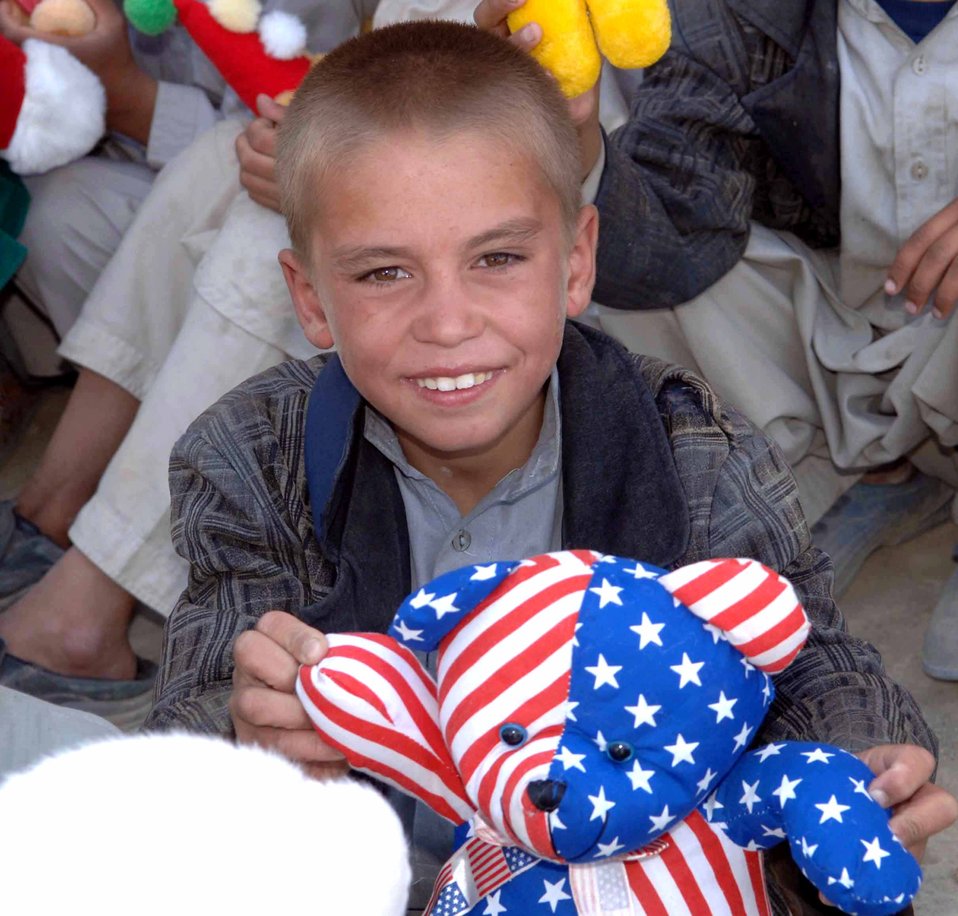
Airmen donate time, supplies to Afghans

PARWAN PROVINCE, Afghanistan -- An Afghan boy holds up a teddy bear given to him by Airmen of the 455th Air Expeditionary Wing at nearby Bagram Air Base during an adopt-a-village visit. The program allows Airmen to assist villages in Afghanistan with infrastructure, fresh water, school supplies and toys for children.